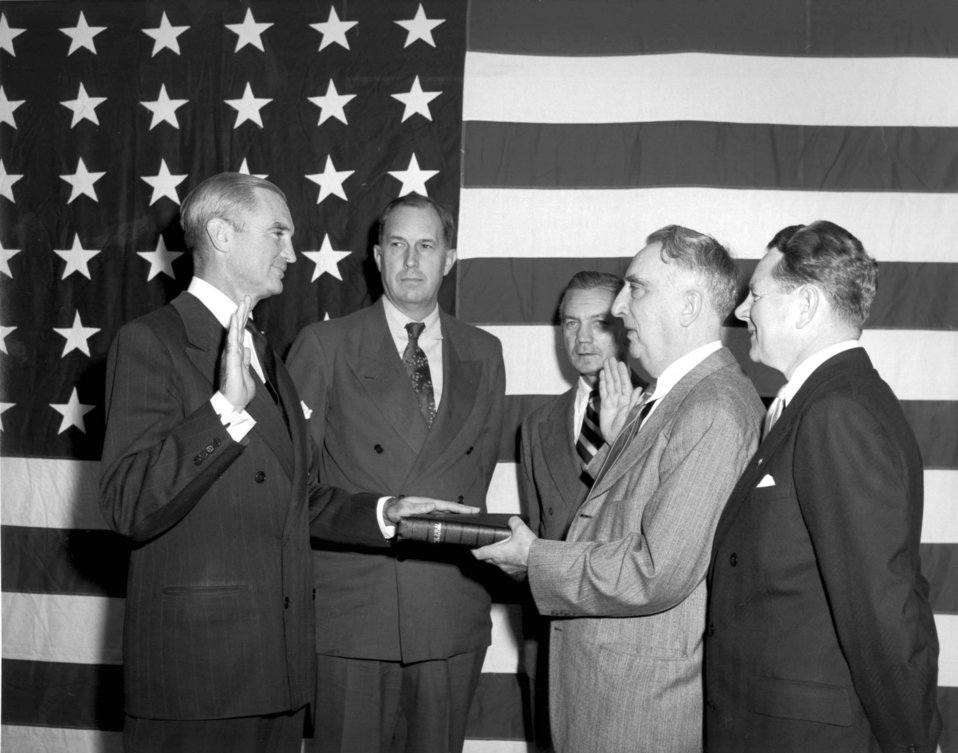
Symington swears in as first SECAF

1940's -- W. Stuart Symington, former Assistant Secretary of War for Air, is shown taking the oath of office as Secretary of the Air Force from Chief Justice Fred Vincent. Left to right are: Secretary Symington, Secretary of the Army, Kenneth C. Royall, Secretary of National Defense James N. Forrestal, Chief Justice Vincent and Secretary of the Navy John Sullivan.